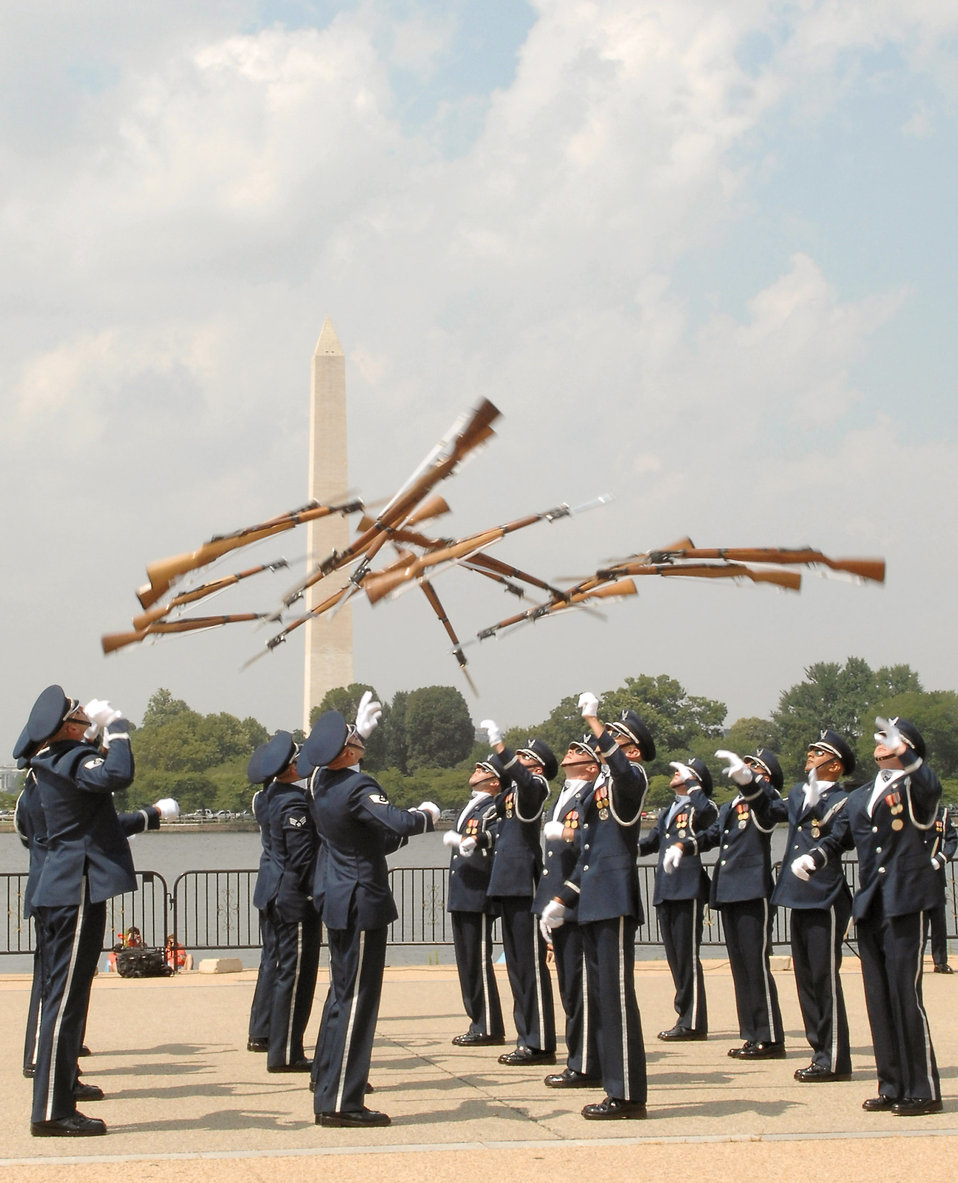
Monumental perfomance

The United States Honor Guard Drill Team performs at the Jefferson Memorial in Washington D.C July 8 during their Summer Drill Series. These drills will be performed around the National Capitol Region until the 29th of July.